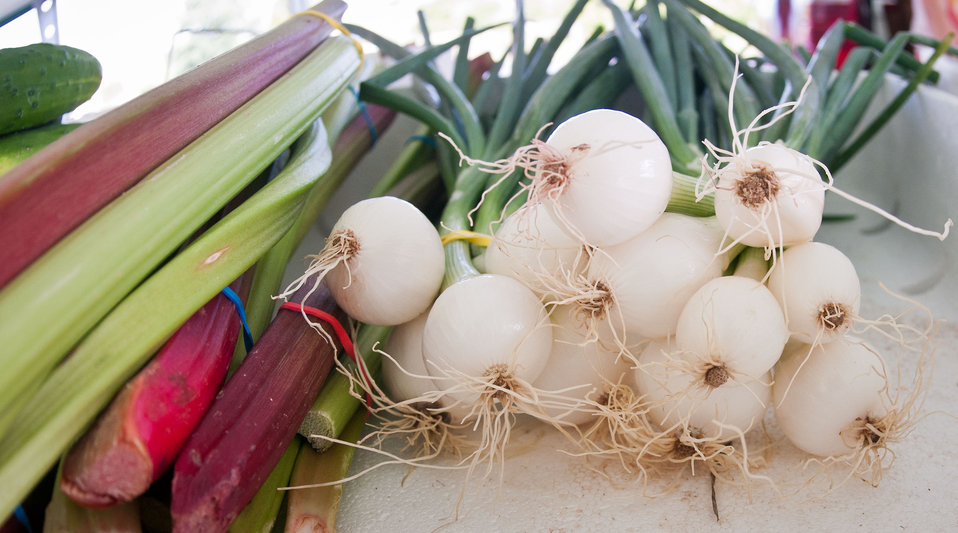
Rhubarb and green onions for sale at the Bath County Agricultural Education and Marketing Center, Owingsville, KY, on Friday, July 15, 2011. The Center was the recipient of a $400,000 Rural Business Enterprise Grant. It has given farmers and producers from Bath and surrounding counties the opportunity to manufacture and market their locally grown and locally produced value-added and “Kentucky Proud” branded products, including but not limited to, fresh produce, artisan crafts and specialty food products. The Center is open year-round and allow residents to sell products in four different retail categories, including Kentucky products, regional crafts, “green” groceries and bakery/deli. Several producers expressed their gratitude for Rural Development’s assistance in making the center a reality. The project was made possible through funding the American Recovery and Reinvestment Act of 2009 enacted by the 111th United States Congress in February 2009 and signed into law on February 17, 2009, by President Barack Obama.